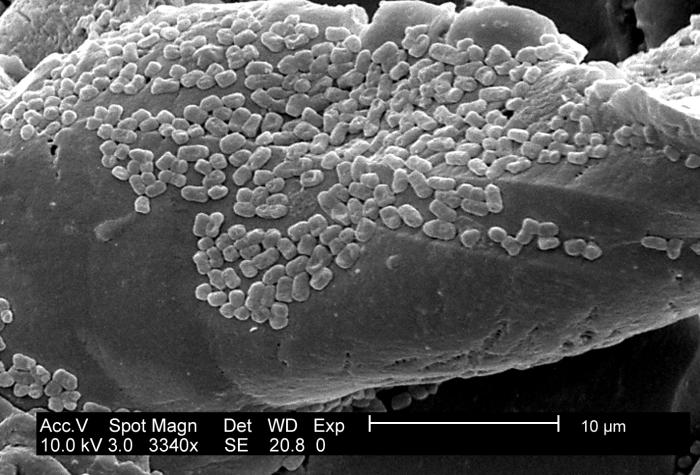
This SEM depicts an E. coli (ATCC 11775) biofilm grown on PC (polycarbonate) coupons using a CDC biofilm reactor.